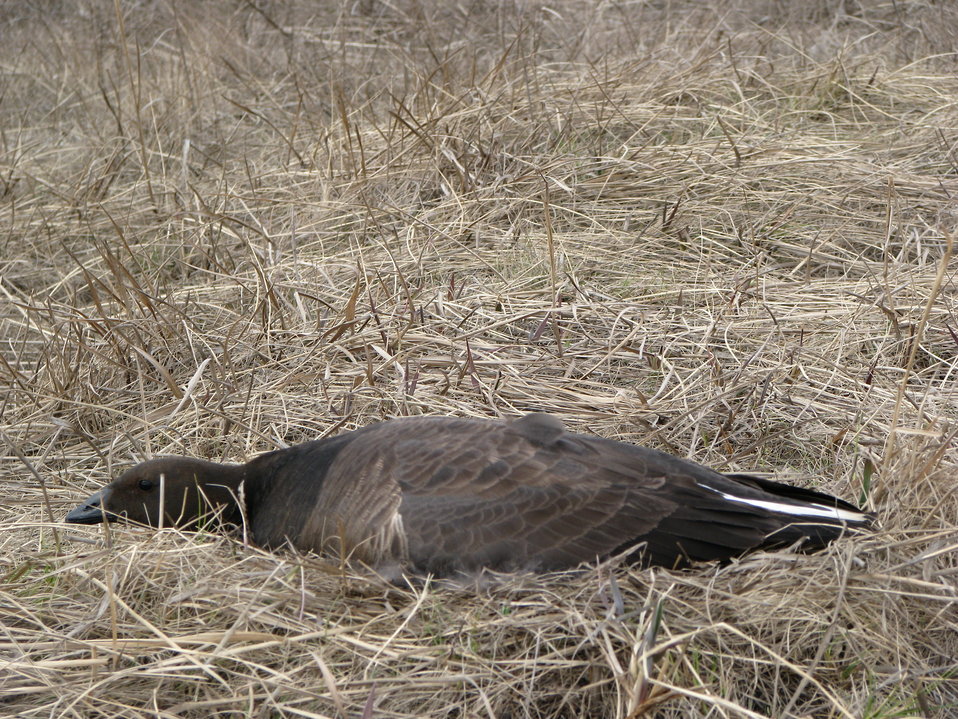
Nesting Pacific Black Brant

USFWS Yukon Delta NWR